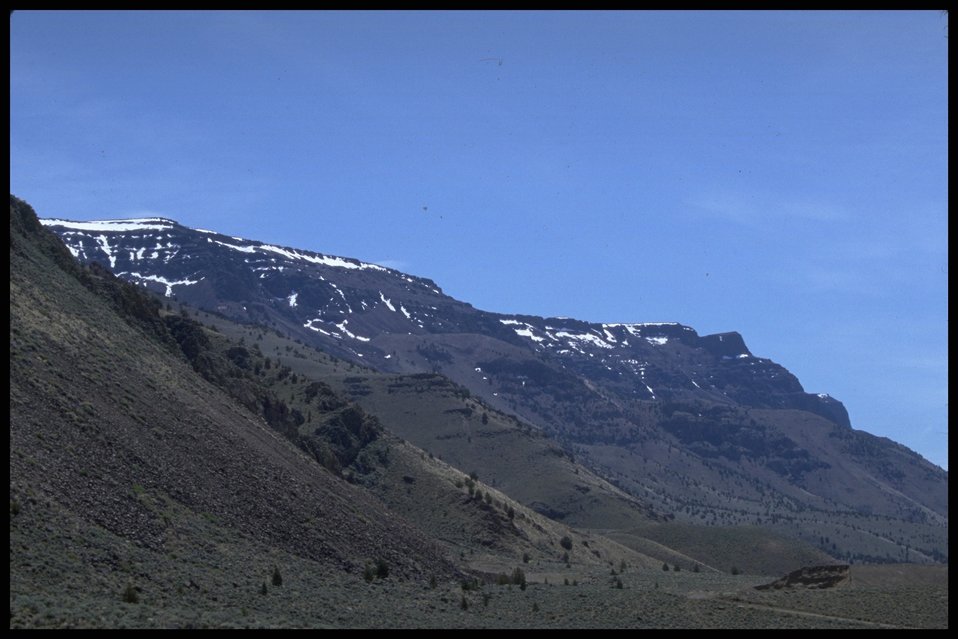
Hart Mountain, Lakeview District.